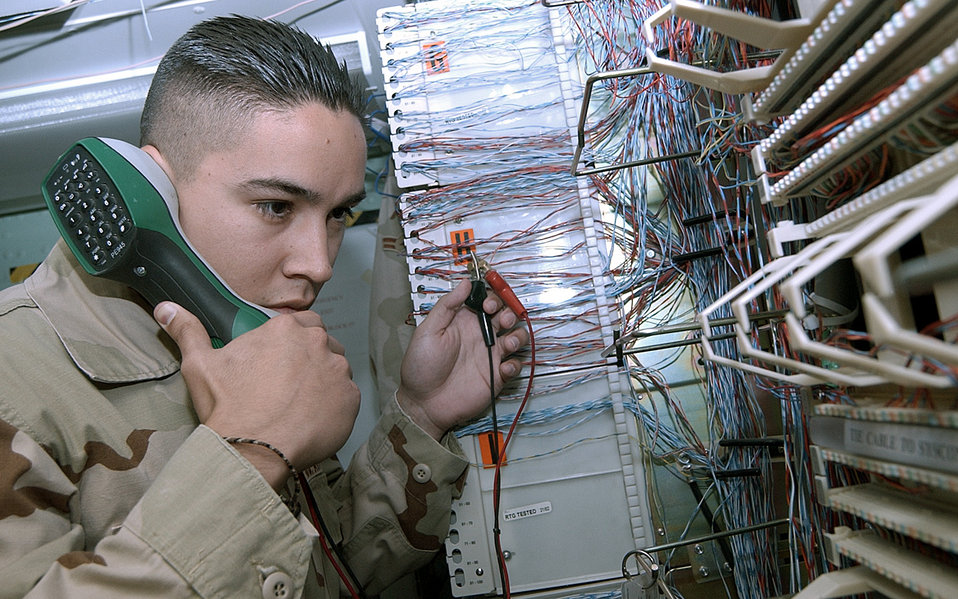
AL UDEID AIR BASE, Qatar (AFPN) -- Senior Airman Rudy Aparicio tests a phone line for a dial tone May 14. He is part of a telephone-maintenance crew that keeps more than 1,000 phone lines operational at the Combined Air Operations Center here. Airman Aparicio is deployed from the 96th Communications Squadron at Eglin Air Force Base, Fla.